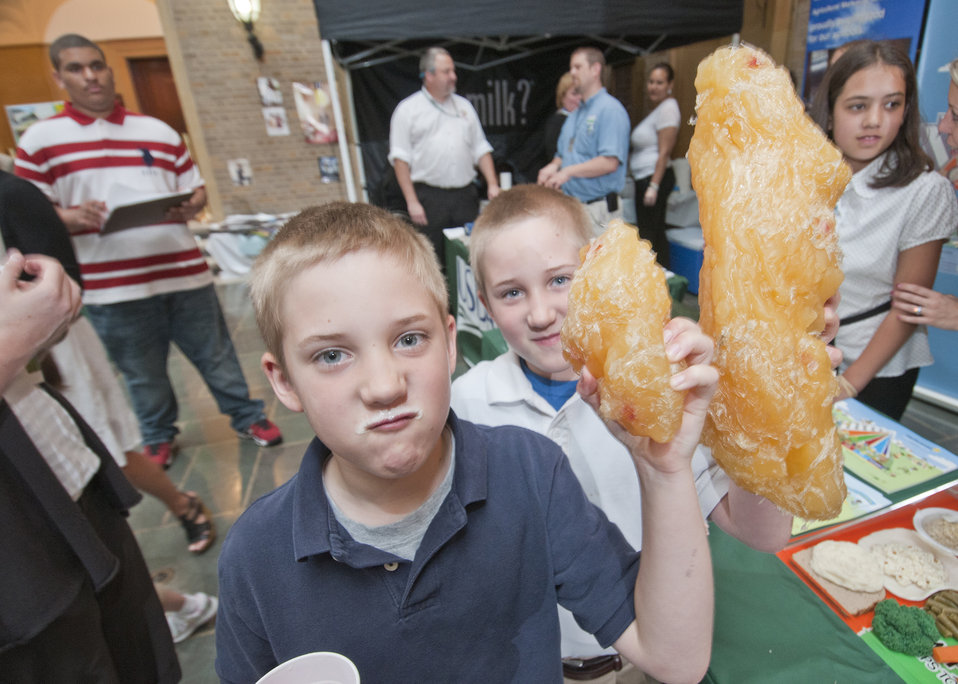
The U. S. Department of Agriculture (USDA) held its annual “Take Your Child to Work Day” on the patio of the Whitten Building, in Washington, DC, on Thursday, April 28, 2011. The program is designed to introduce young people to USDA’s wide range of responsibilities and services. Danny and Ryan McMahon learn about the fat content of certain foods at the Food Nutrition Service exhibit at Agriculture’s “Take Your Child to Work Day” event.